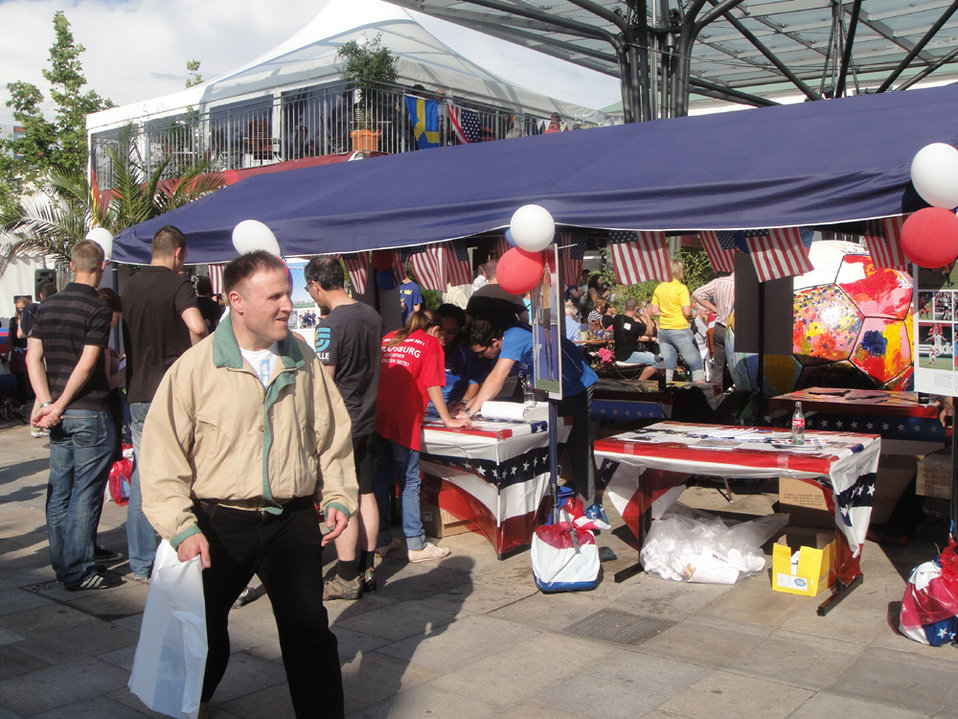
Fans Take Part at the Consulate Booth at the “Fanmeile” in Wolfsburg, Germany

Consulate General Hamburg uses the occasion of the Sweden – U.S. match to test people’s knowledge about U.S. culture and women’s soccer at the “Fanmeile” in Wolfsburg, Germany, on July 6, 2011.